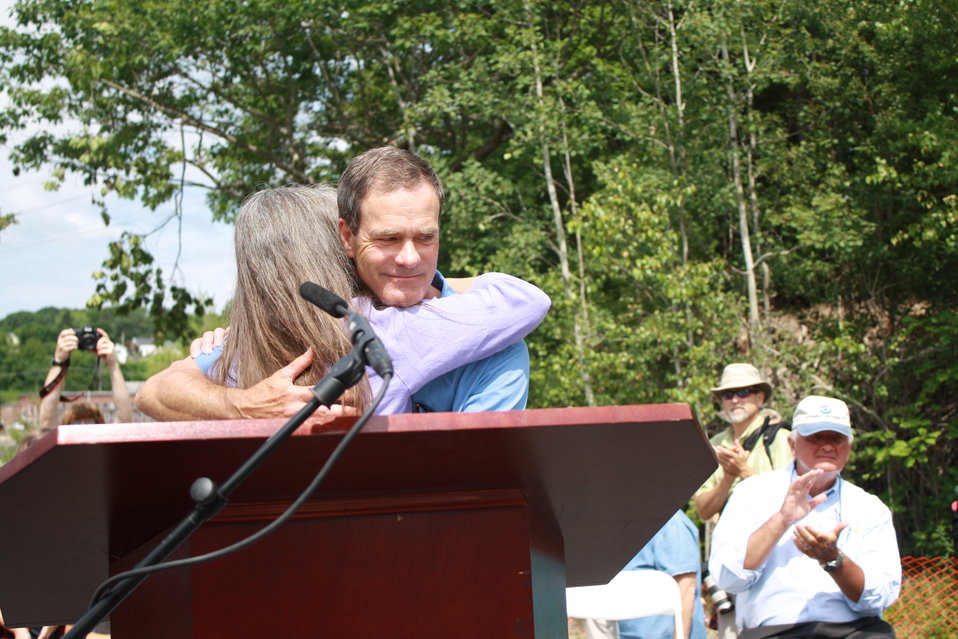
Veazie Dam Removal

Laura Rose Day, Executive Director of the Penobscot River Restoration Trust, hugs Tom Rumpf, Acting Director of The Nature Conservancy.